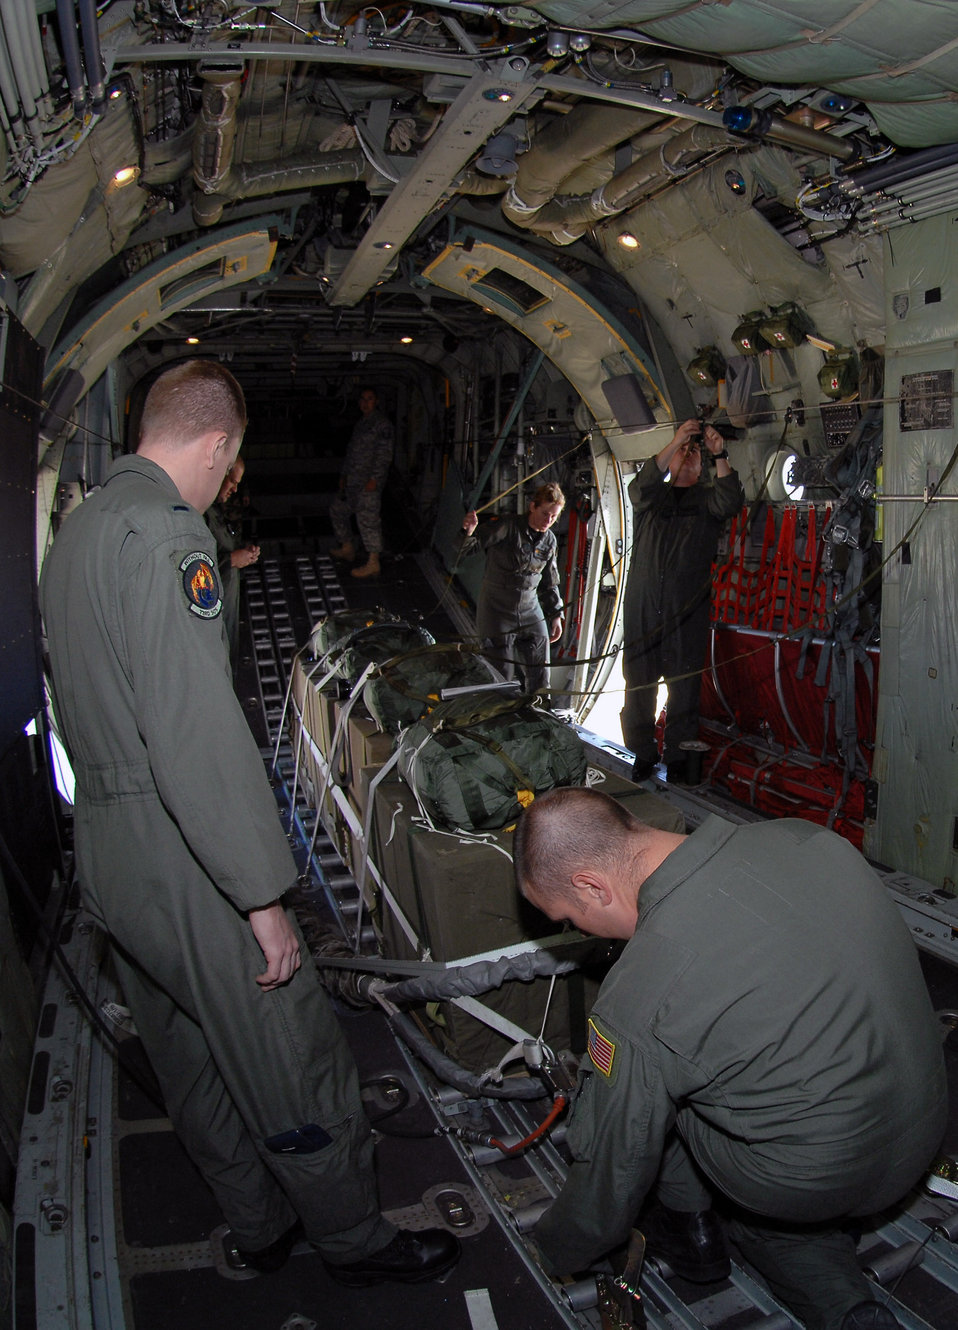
Cannon Airmen train for special operations forces resupply

Aboard the MC-130W Combat Spear, 1st Lt. Jared Butler and Tech. Sgt. Nicholas Armitage ensure cargo is properly secured. The Airmen performed an air drop Sept. 24 as part of their regular training to get equipment to ground forces if an airfield is not available. Lieutenant Butler and Sergeant Armitage are assigned to the 73rd Special Operations Squadron.